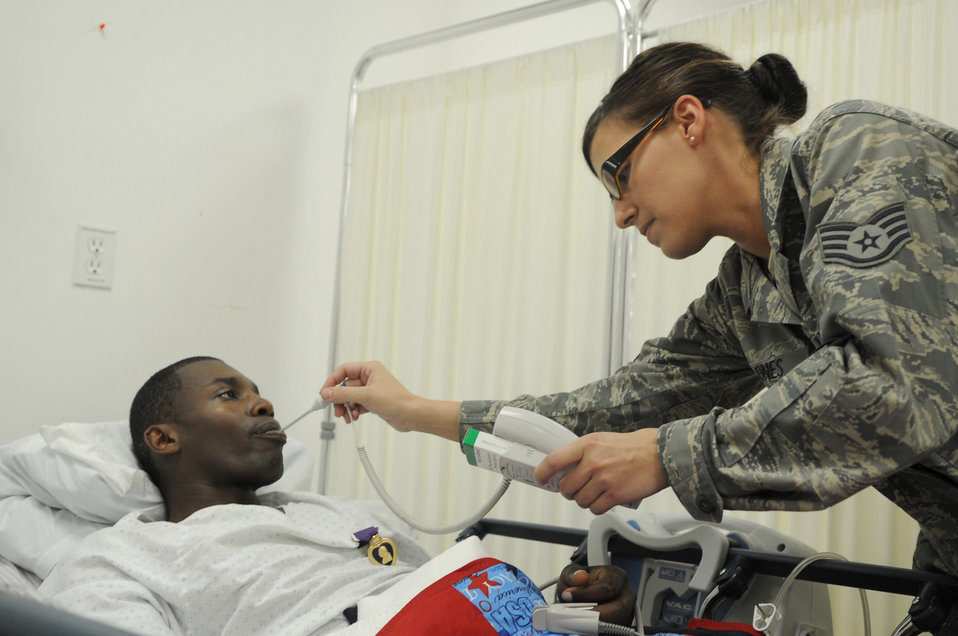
Medical Airmen integral to medal ceremony

Staff Sgt. April Jones checks Army 1st Lt. Corey Bunch's temperature moments after he received a Purple Heart Jan. 4, 2011, at Joint Base Balad, Iraq. The Charlie Company 1-21 Infantry Battalion member was admitted to the intensive care unit here after her was injured in an improvised explosive device attack near Abu Sayada, Iraq. Sergeant Jones is a 332nd Expeditionary Medical Operations Squadron medical technician.